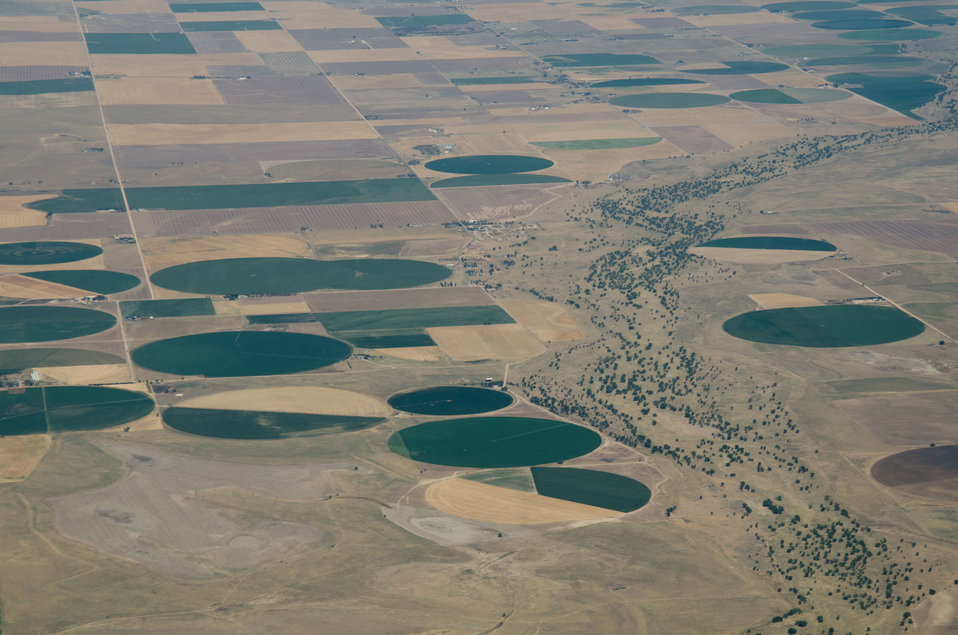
Aerial views of drought affected Colorado farm lands, near Wiggins, Colorado on Saturday, July 21, 2012. Green areas are irrigated, the yellow areas are dryland wheat crops.